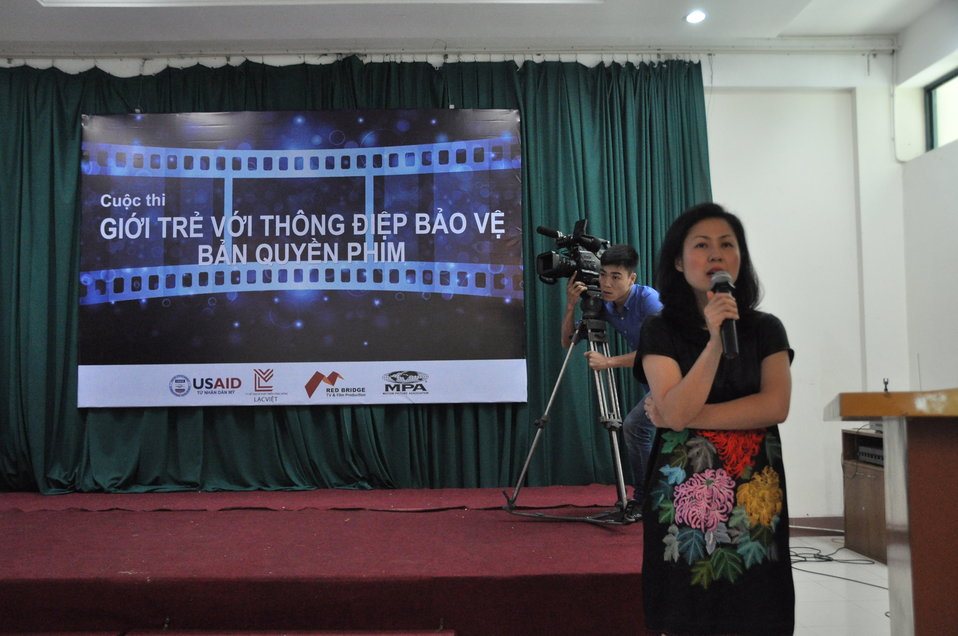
USAID supports scriptwriting contest for students in Hanoi to boost intellectual property rights awareness